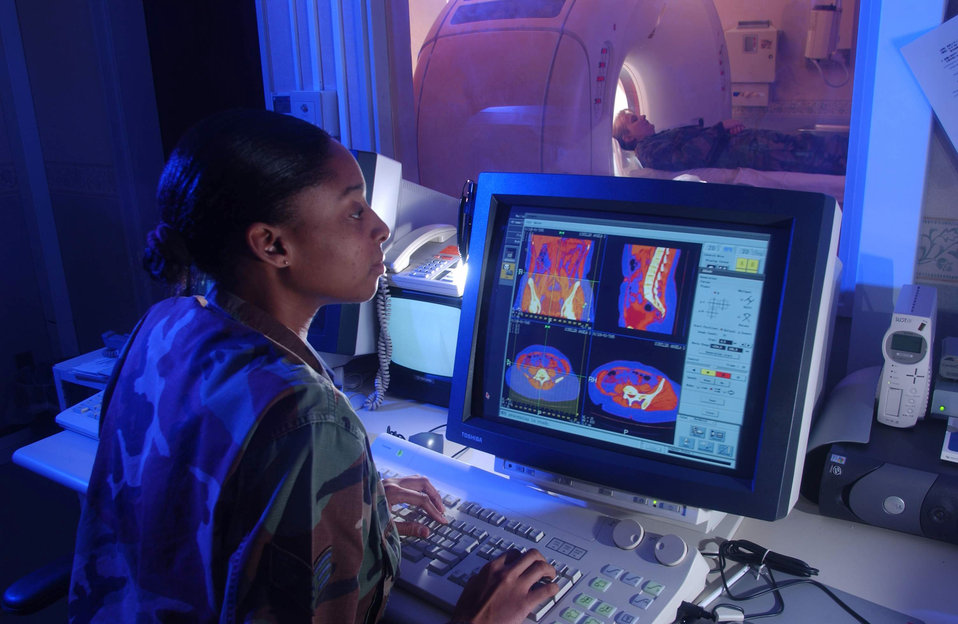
Inner Scan

YOKOTA AIR BASE, Japan -- Senior Airman Shavonda Tariuwa, a diagnostic imaging technician with the 374th Medical Group, reconstructs 3D images of a patient during CT scanner training, Nov. 1. The CT scan is used to check abnormal conditions including fractures, bleeding, tumors and other trauma related conditions.